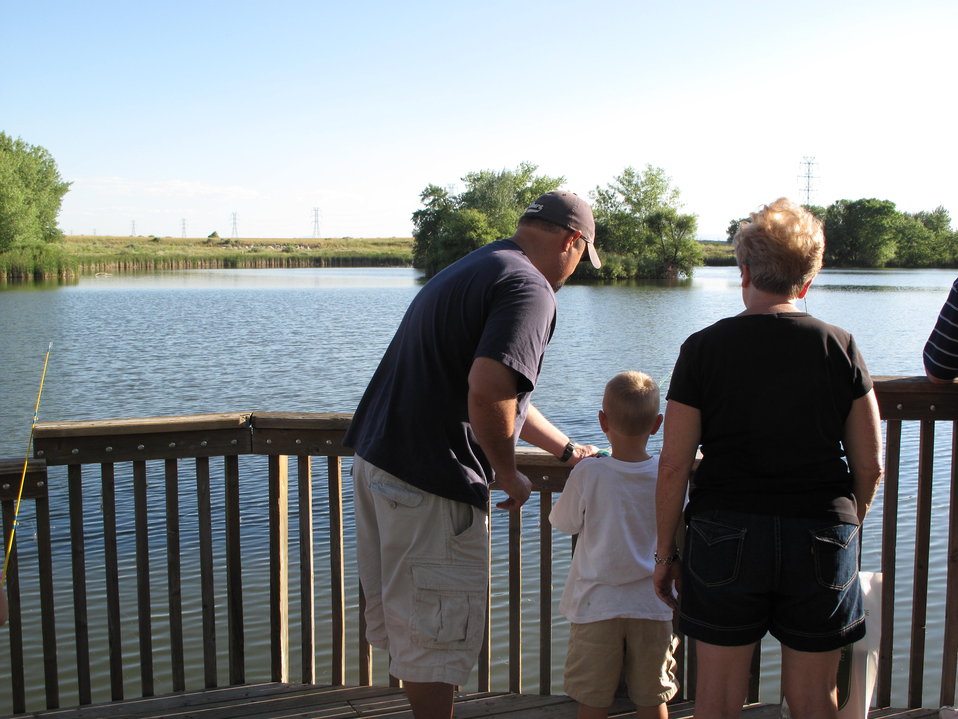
Fishing